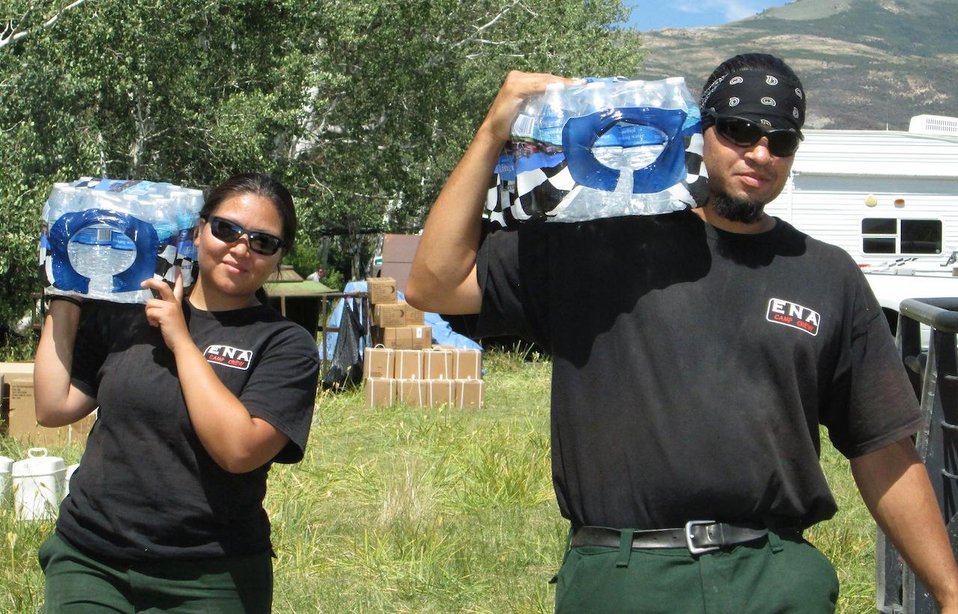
Smith Ranch Fire Camp crew transport cases of water at the base camp. The Smith Ranch Fire located 10 miles northwest of Jiggs, NV began on Jul. 19, 2013 by lightning and has consumed approximately 2,759 acres. The Smith Ranch Fire is 100% contained.